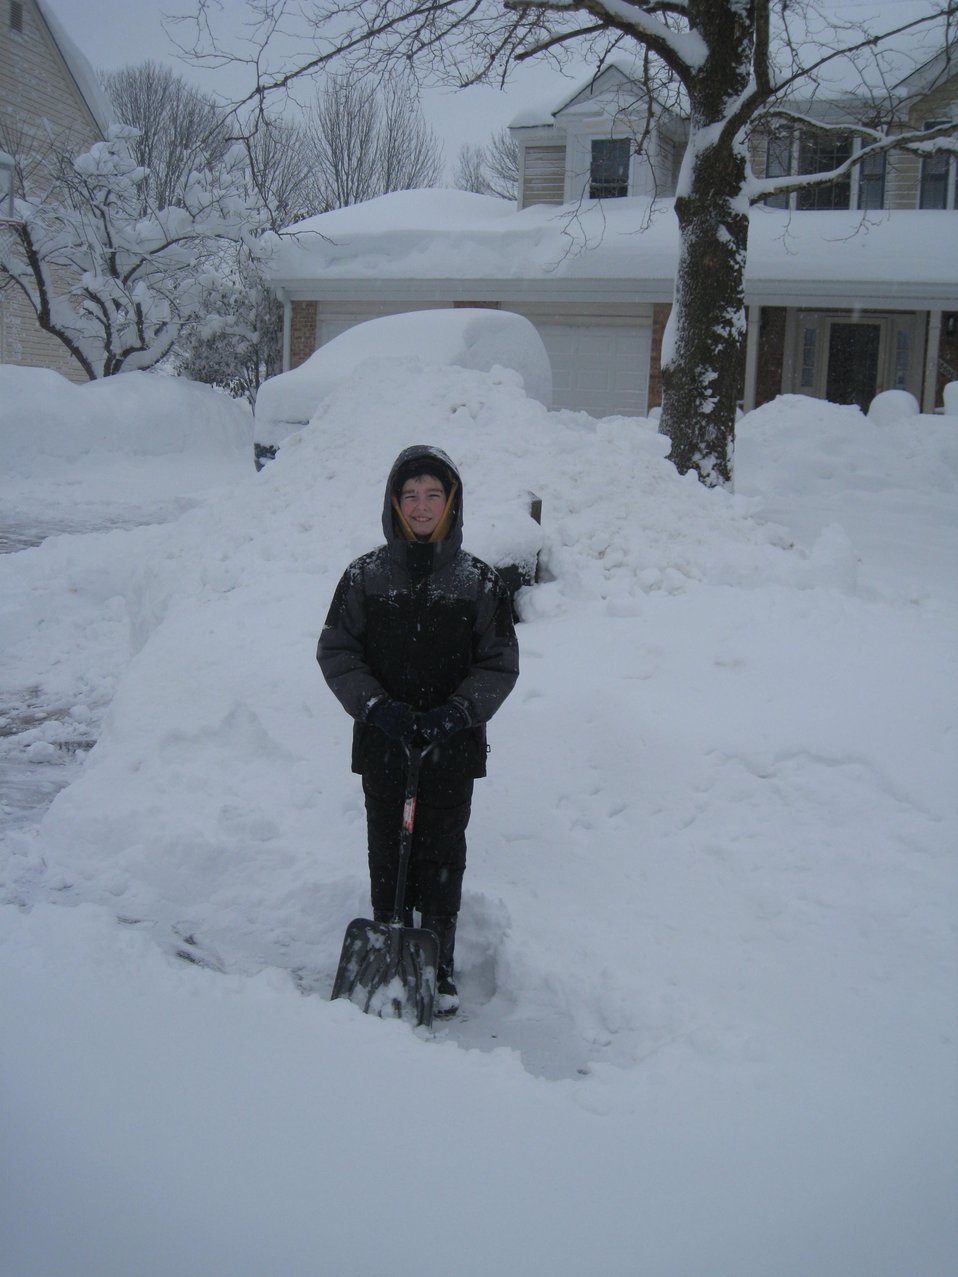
Shoveling out driveways led to 6-foot and greater piles of snow.